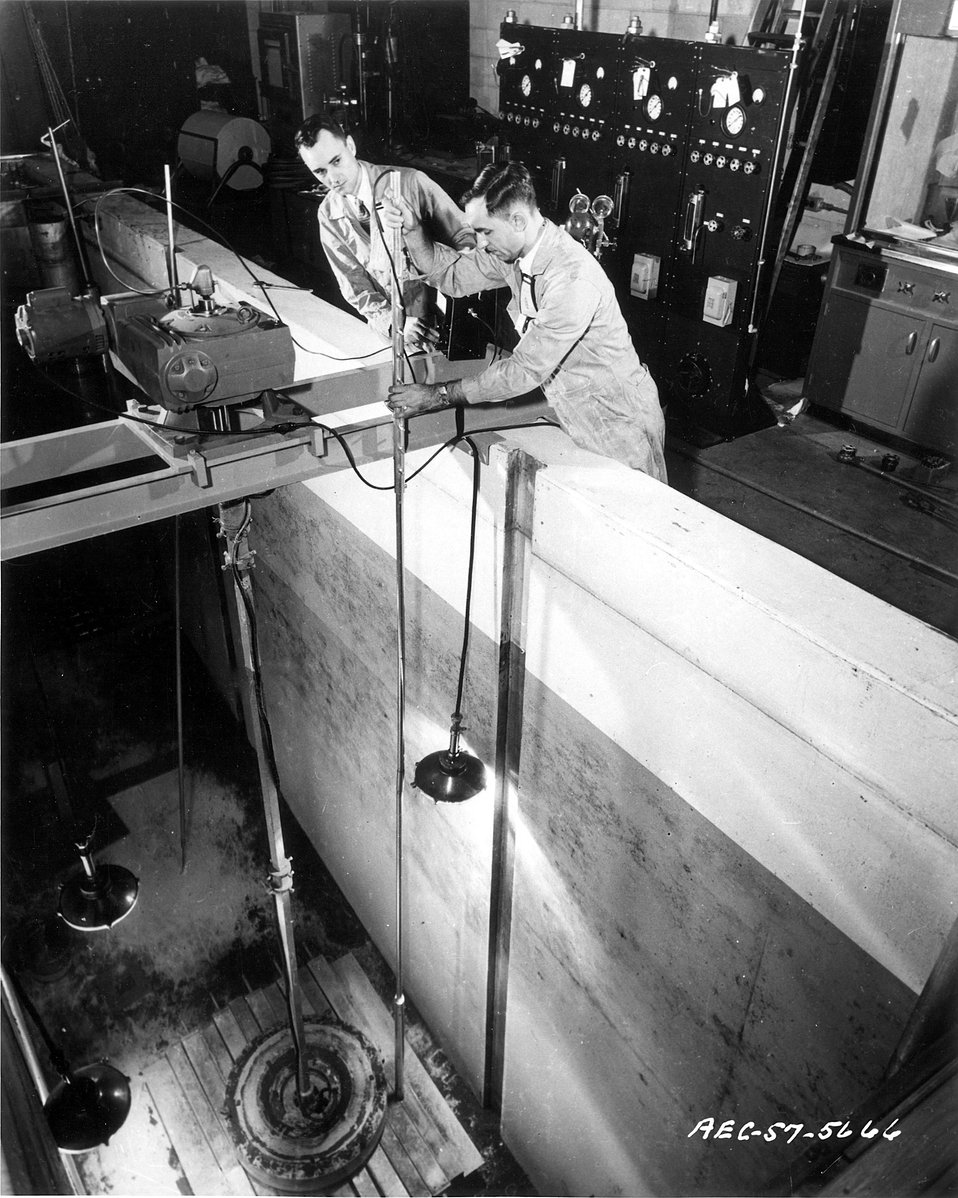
Vulcanization of a tire by nuclear radiation has been achieved by The B.F. Goodrich Company utilizing the facilities of the Atomic Energy Commission's Gamma Ray Facility at the National Reactor Testing Station, Idaho. Circa 1957.